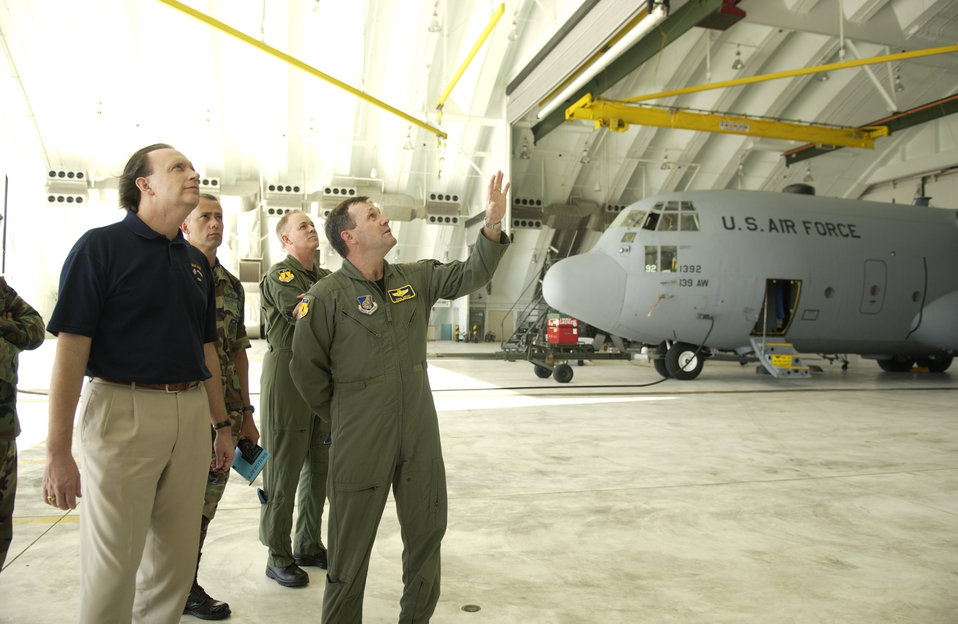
Service secretaries visit Guam to analyze joint basing status

Brig. Gen. Douglas H. Owens gives William C. Anderson a tour of Hangar 1 Jan. 20 during his visit to Andersen Air Force Base, Guam. As assistant secretary of the Air Force, Mr. Anderson heads three division departments that deal at the policy level with Air Force facility and logistical issues. The department's responsibilities include installations, military construction, base closure and realignment; environment, safety and occupational health issues; and all logistical matters. General Owens is the 36th Wing commander.